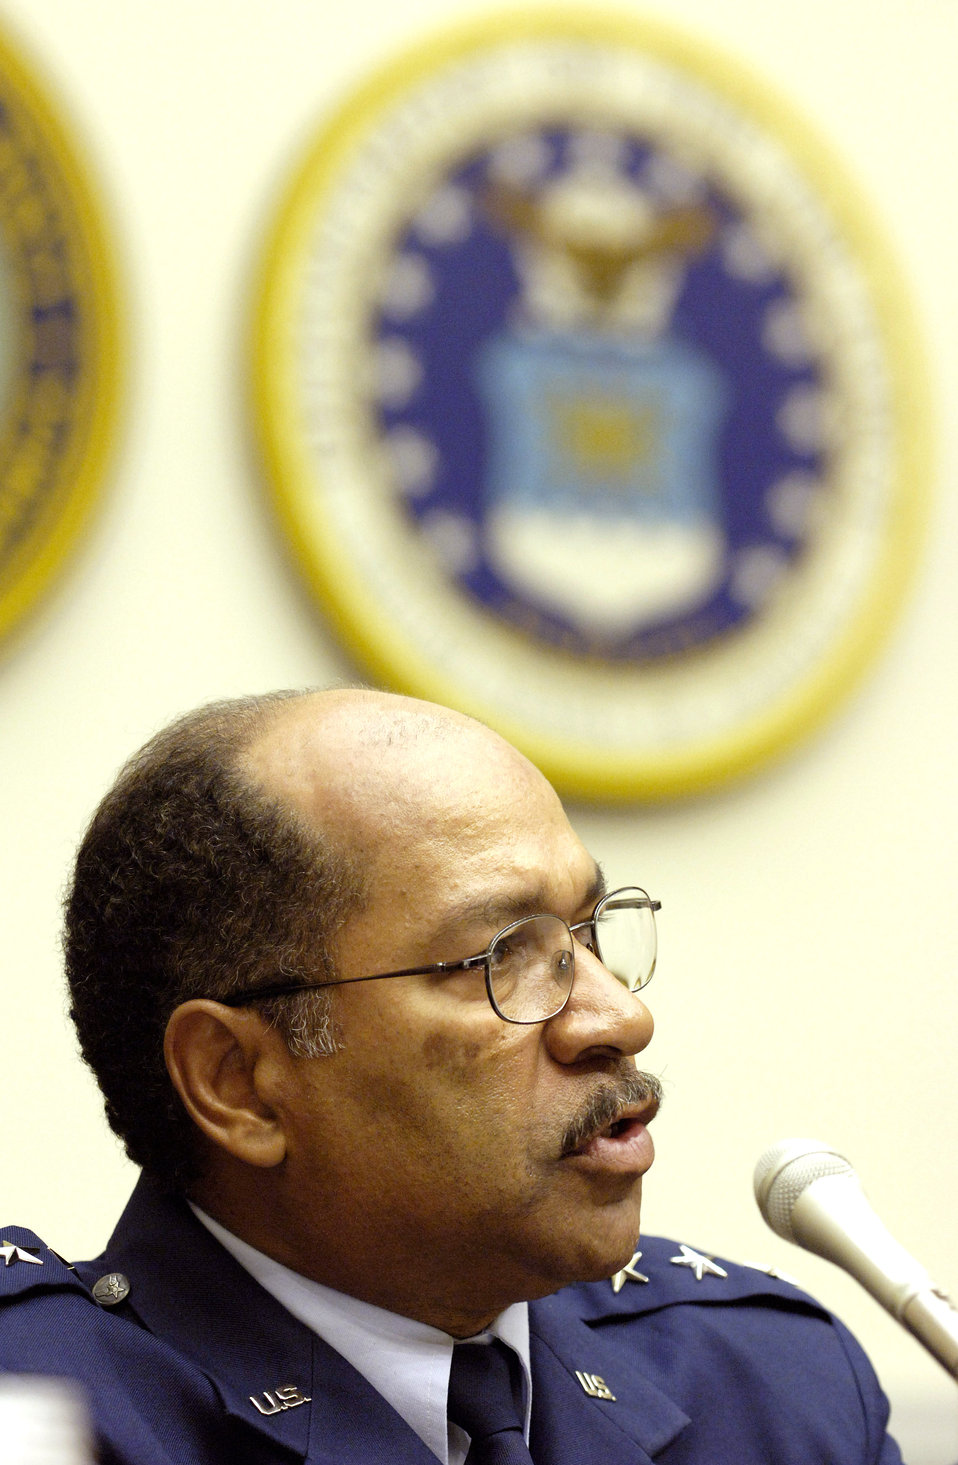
Future Total Force testimony

WASHINGTON -- Lt. Gen. Daniel James III answers questions about the Air Force's future total force initiative during a hearing before the House Armed Services Committee July 20. The goal of the future total force initiative is to maximize Air Force capabilities by identifying emerging relevant missions for the active-duty component, the Air National Guard and the Air Force Reserve as a total force team. General James is the ANG director.